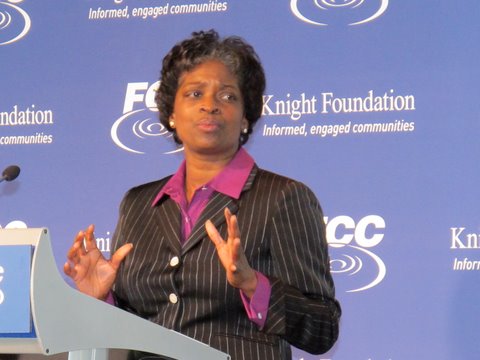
FCC Commissioner Mignon Clyburn addresses America's Digital Inclusion Summit at The Newseum, March 9, 2010.